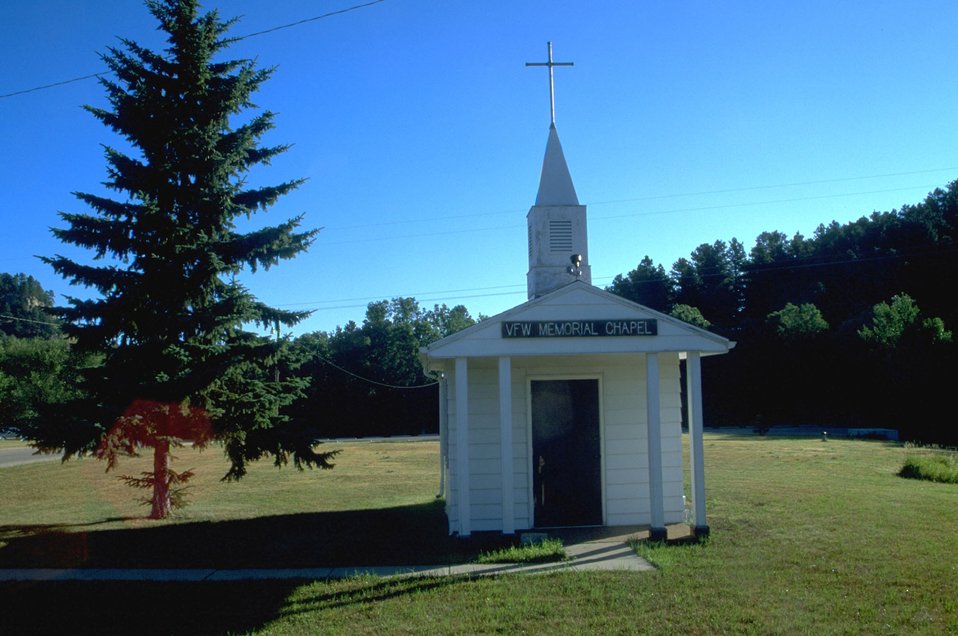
VFW Memorial Chapel looking east